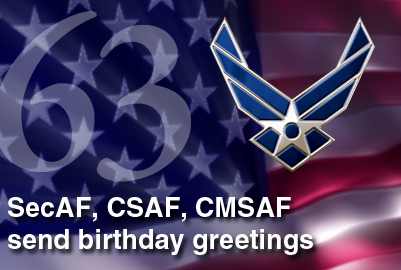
Air Force Birthday